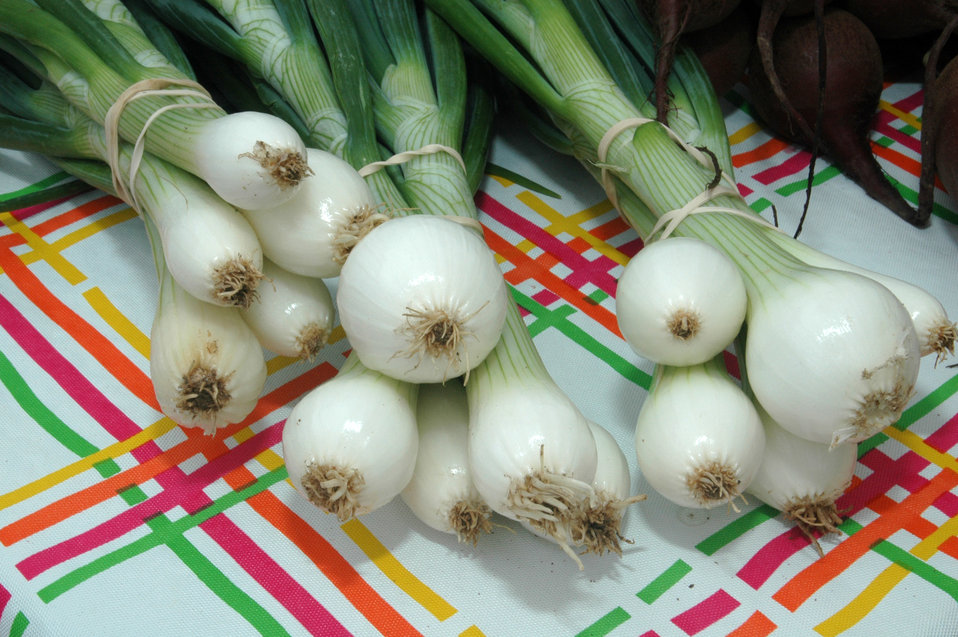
Onions for sale at the U.S. Department of Agriculture (USDA) Farmer’s Market held in the East parking lot of USDA's Whitten Building in Washington, D.C. on June 2, 2006.